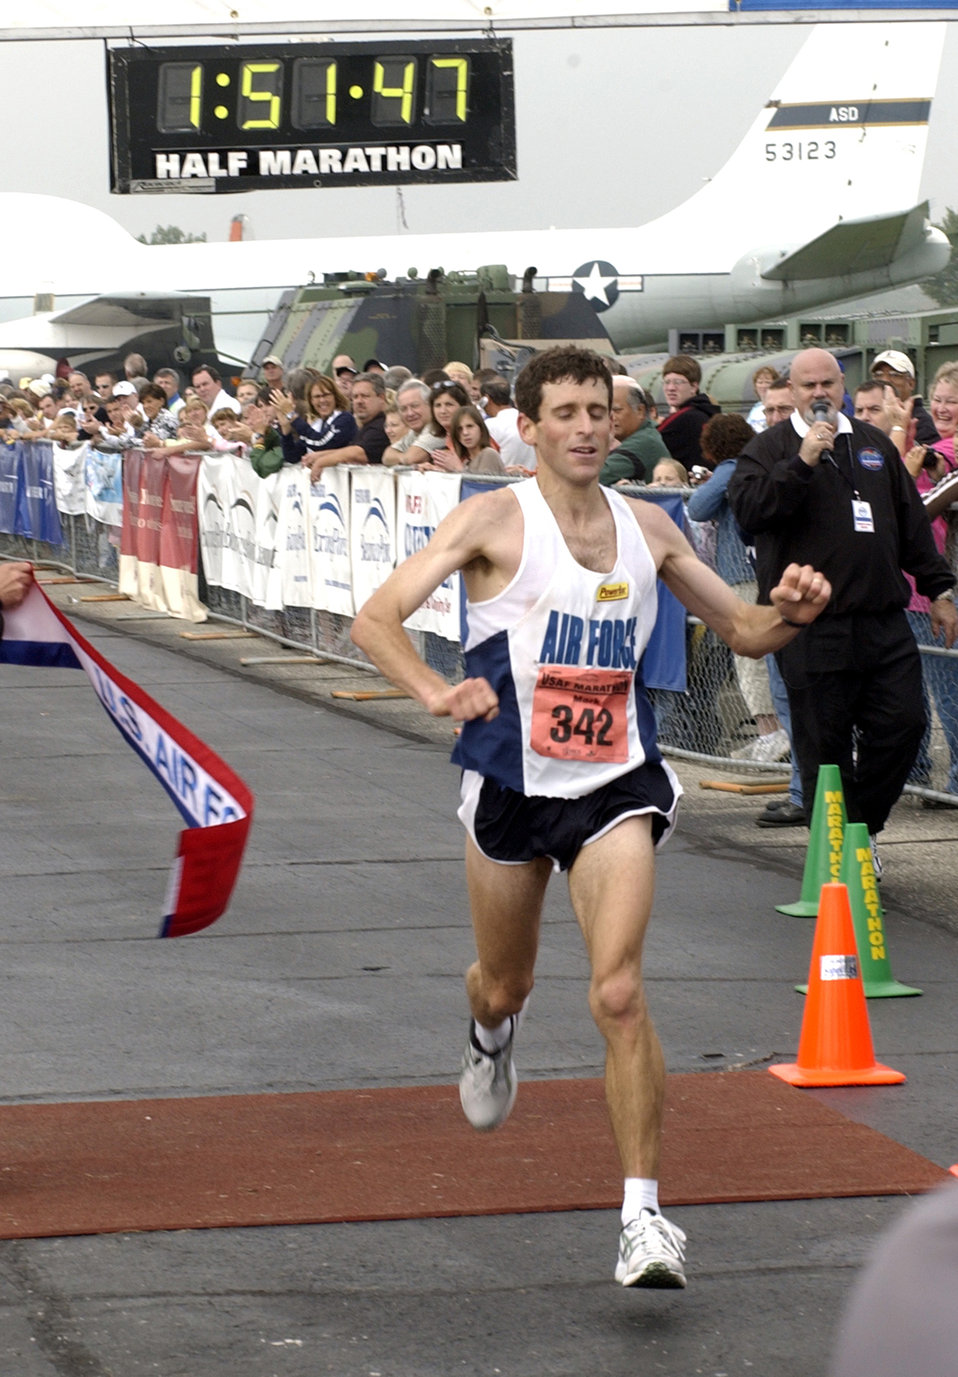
Airman, Soldier take top Air Force marathon races

Mark Cucuzzella crosses the finsh line in the time of 2:31:47 to take first place in the men's division at the 2006 Air Force Marathon at Wright-Patterson Air Force Base, Ohio, on Sept. 16. An Air Force lieutenant colonel, he is from Shepardstown, W.V.